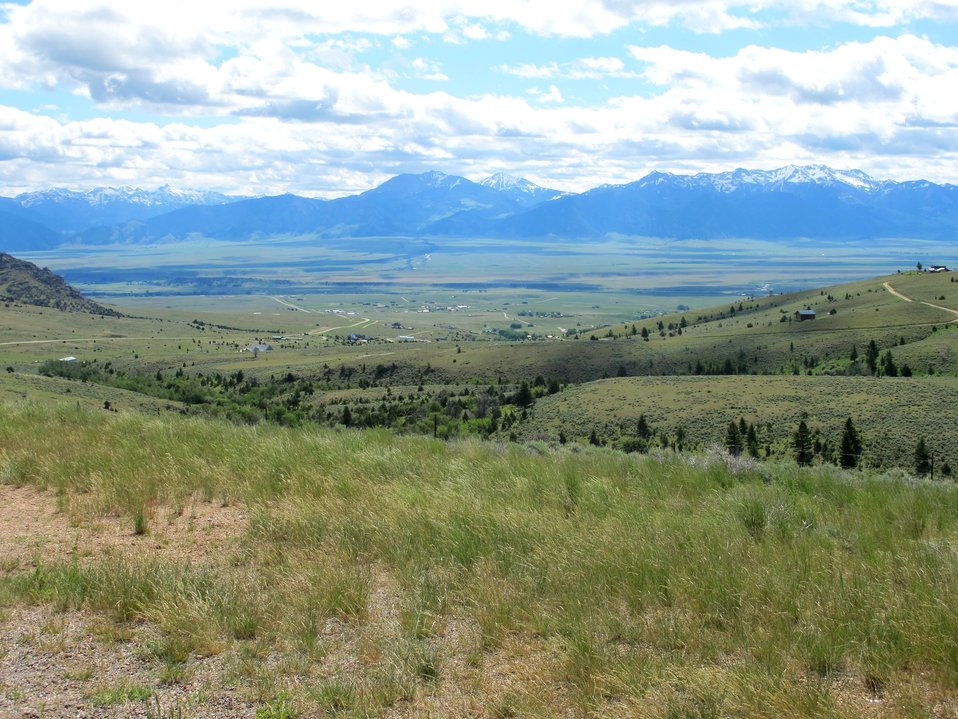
Looking into the Madison Valley from an un-named pass between Ennis and Twin Bridges.